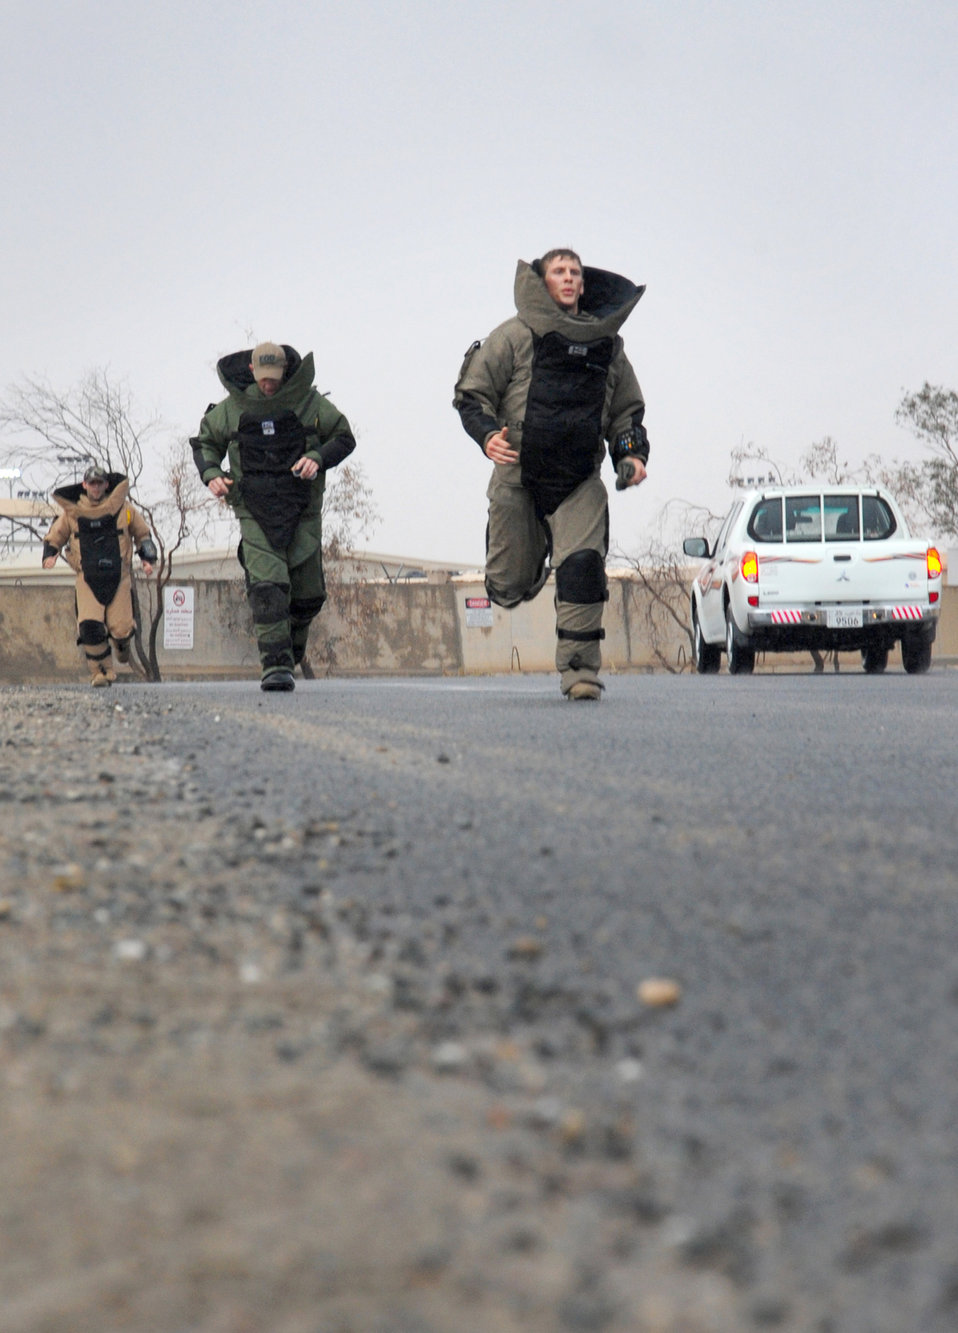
Southwest Asia fun run

Air Force and Army explosive ordnance disposal members participate in a fun run Dec. 31, 2010, at an air base in Southwest Asia. The fun run was part of a fundraiser and to raise awareness for explosive ordnance disposal Wounded Warrior, Hope for the Warriors and the EOD Memorial.